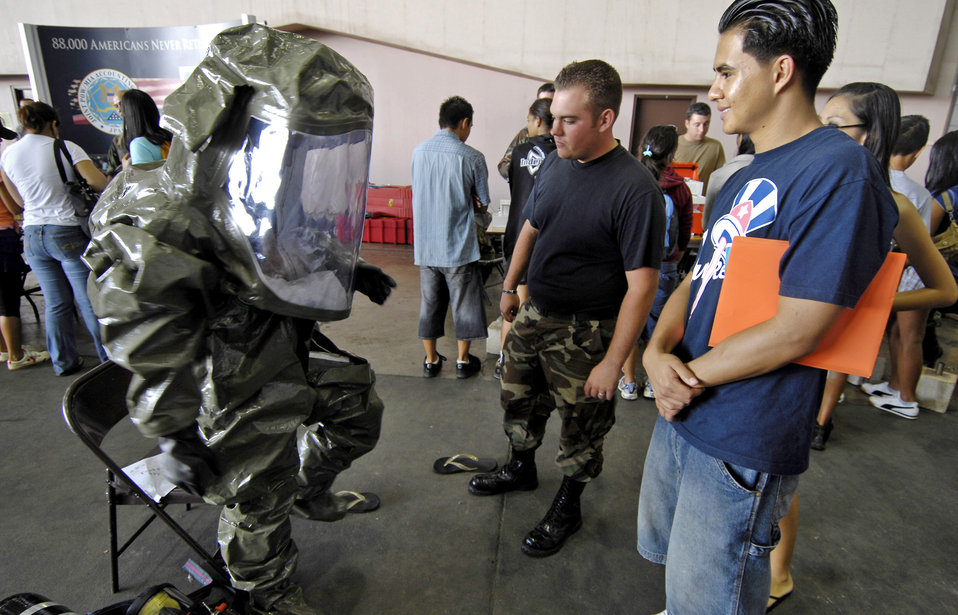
Hickam hosts Education Day

Airman 1st Class Tim Batley watches as a high school student tries on a protective suit Sept. 13 at Hickam Air Force Base, Hawaii, during Air Force Education Day. Members of 13th Air Force hosted the day for Hawaii public school math and science students as part of Air Force Week Honolulu. Airman Batley is a bioenvironmental engineer from Hickam.